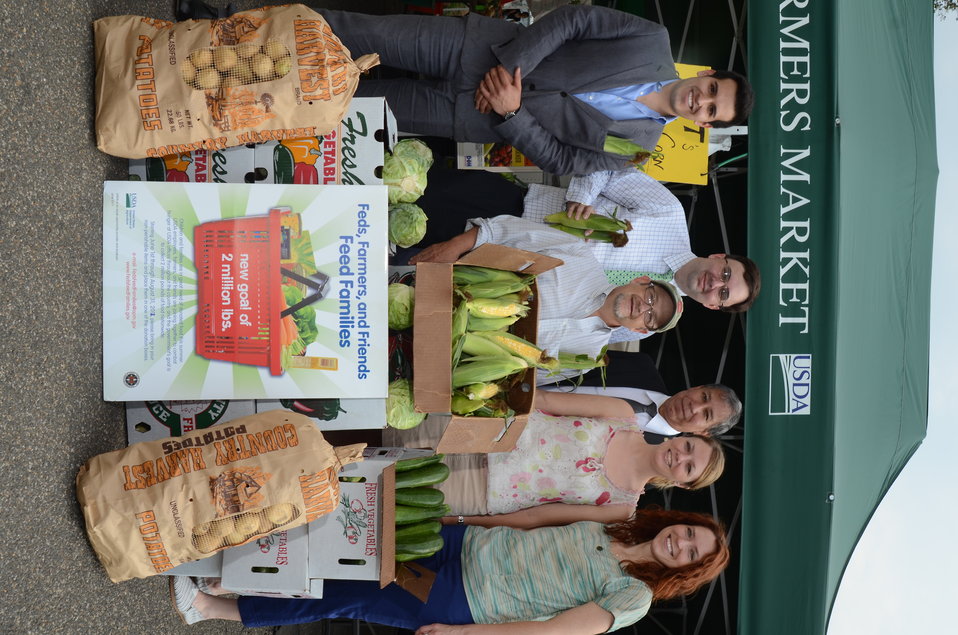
U.S. Department of Agriculture's (USDA) Marketing and Regulatory Programs (MRP) donates potatoes, corn, cabbage, and zucchini to the Feds Feed Families program at USDA's Farmers Market on Friday, June 22, 2012. (L to R U.S. Department of Agriculture's (USDA) Marketing and Regulatory Programs (MRP) intern Alex Canepa, USDA MRP Senior Advisor Mike Schmidt, USDA Organic & Sustainable Agriculture Policy Advisor Mark Lipson (directly behind corn), USDA Under Secretary MRP Ed Avalos, USDA MRP Special Assistant Lisa Bertelson, and USDA Deputy Under Secretary MRP Rebecca Blue).